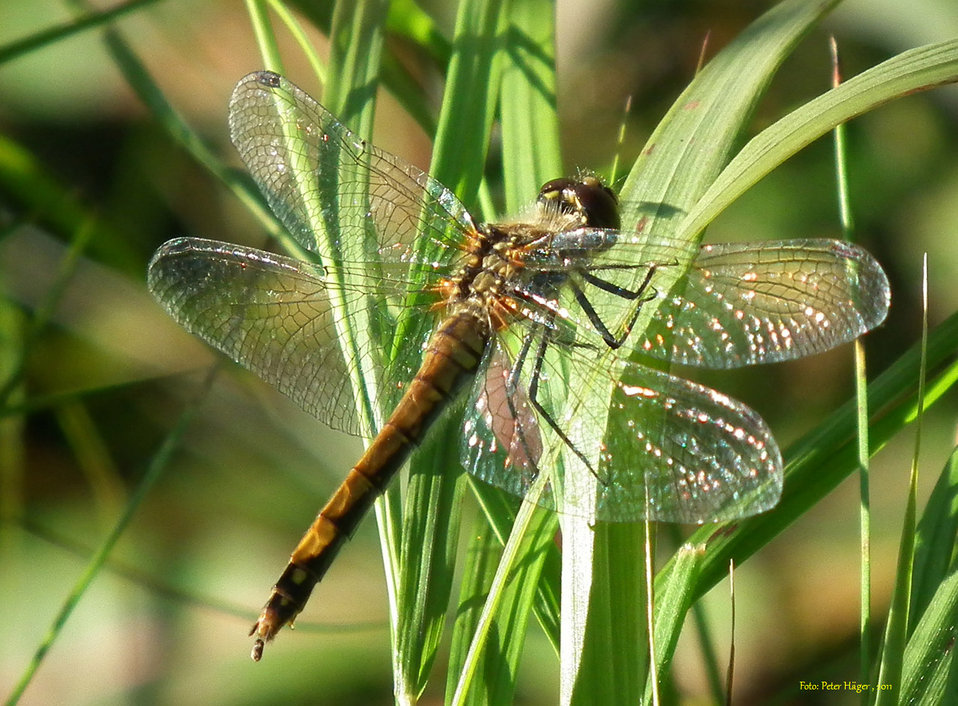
Dragonfly

A dragonfly rests on a leaf.